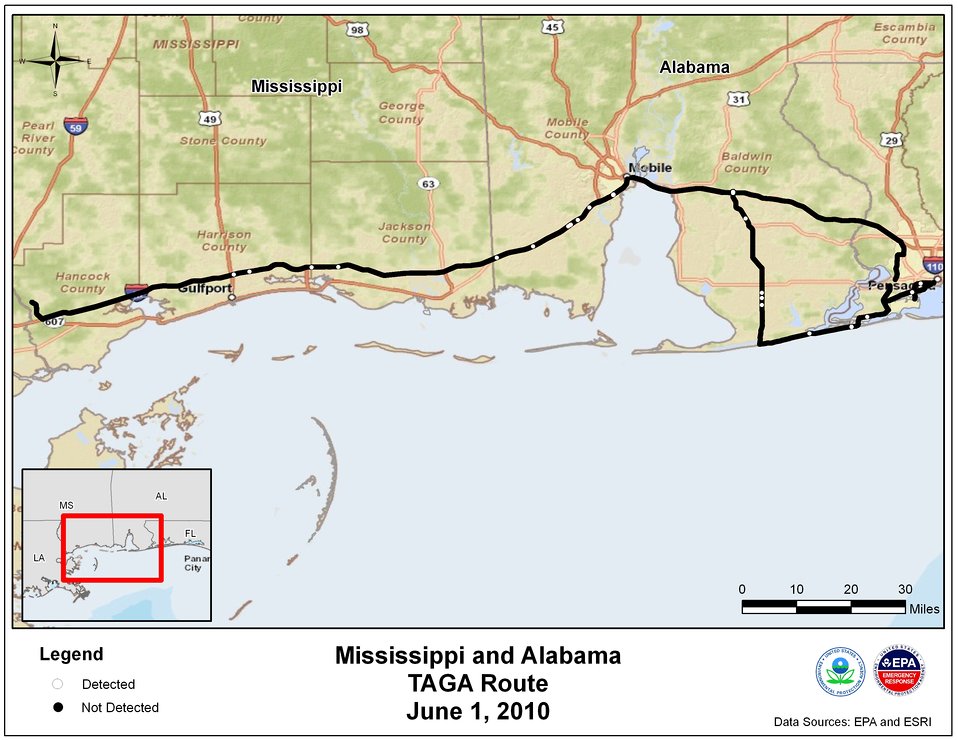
EPA TAGA Air Monitoring Locations June 1, 2010